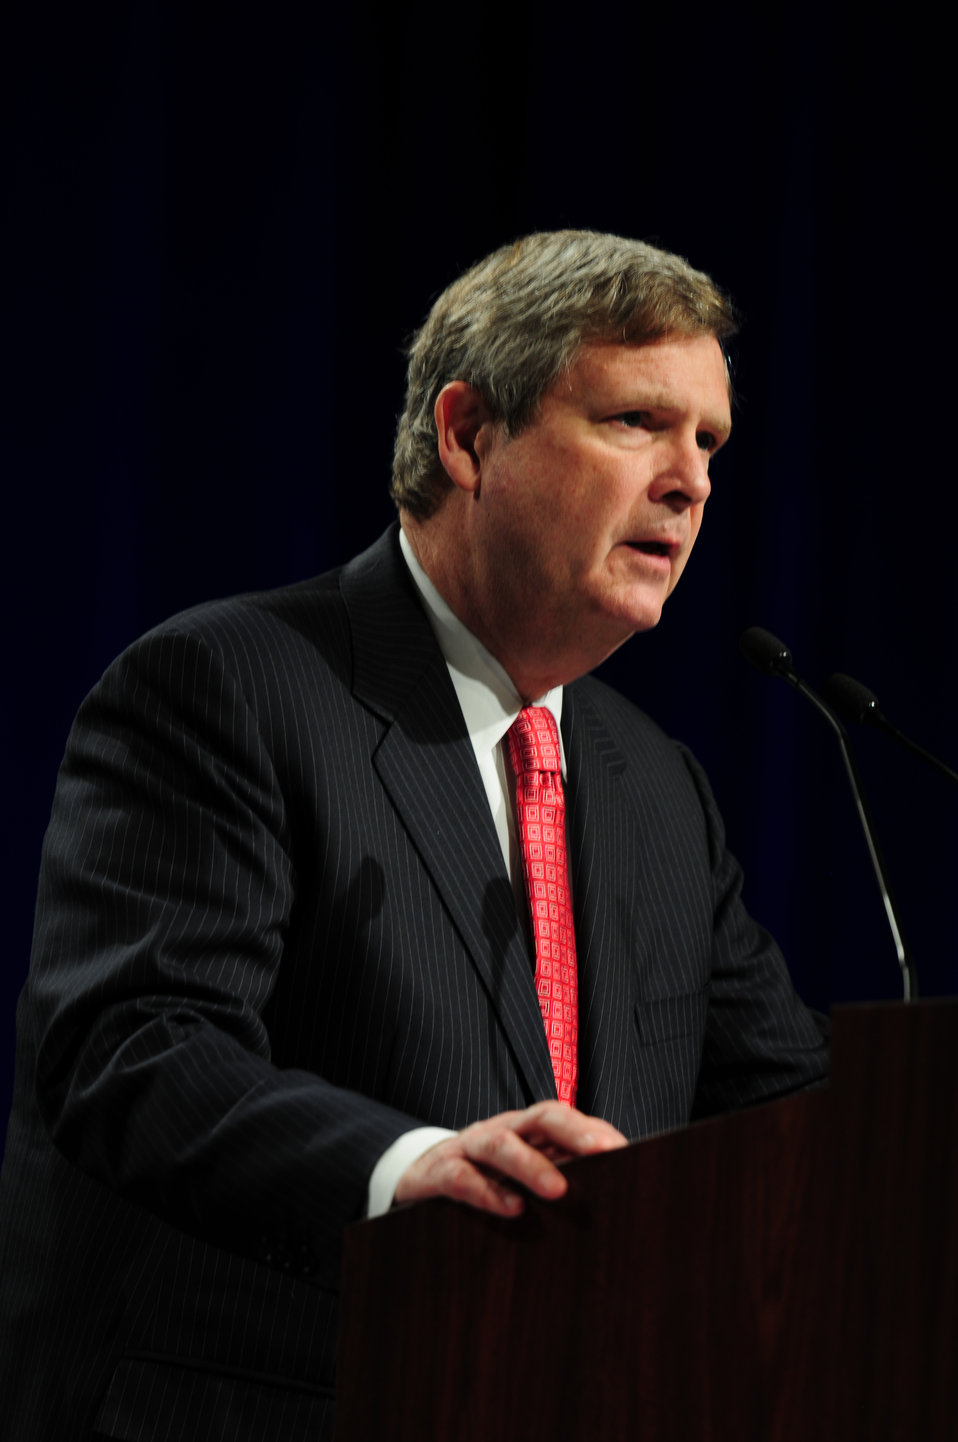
Agriculture Secretary Tom Vilsack speaks at the American Farm Bureau Annual Meeting Closing Ceremony at the Convention Center in Waikiki, Hawaii, on Sunday, January 9, 2012.